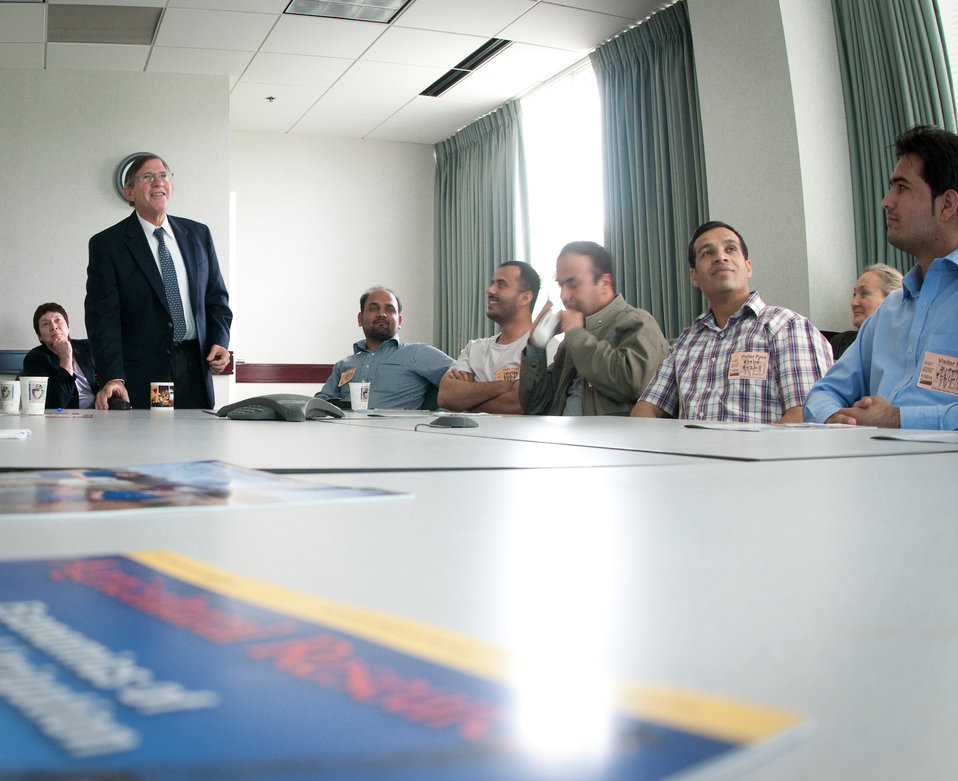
U.S. Department of Agriculture (USDA), Agriculture Research Service's (ARS) Office of Scientific and Quality Review’s Mike Strauss (standing), talked about engaging scientists and outside experts to measure and ensure scientific quality, during a presentation to 12 Borlaug Fellows from Afghanistan’s Ministry of Agriculture, Irrigation and Livestock (MAIL), at the George Washington Carver Center, in Beltsville, MD, on Wednesday, September 21, 2011.